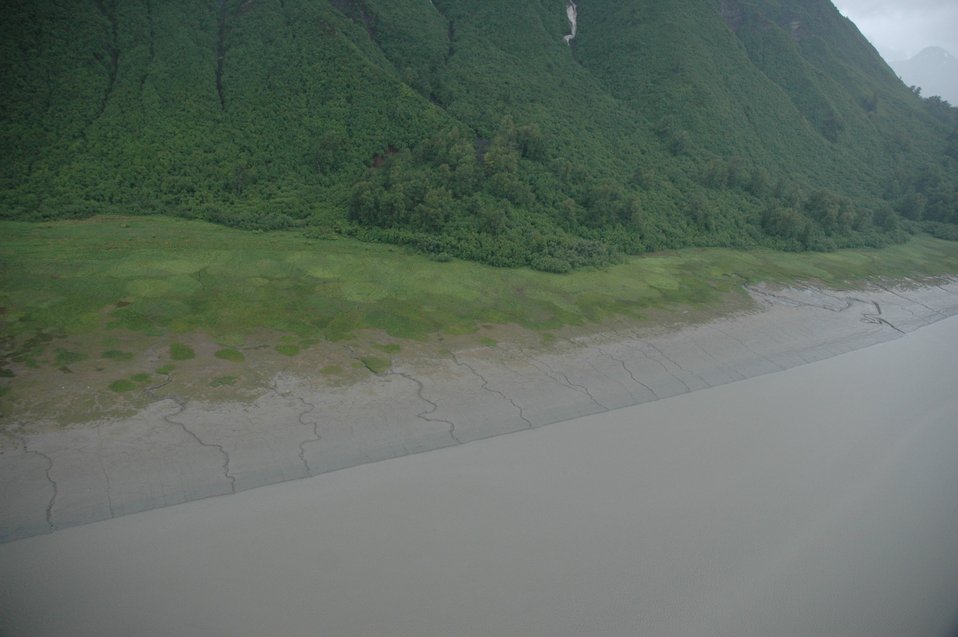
Aerial photograph. the continuation of streams running off a steep mountainside into the tidal zone is apparent. Note the very pronounced meander in the center-right steam.